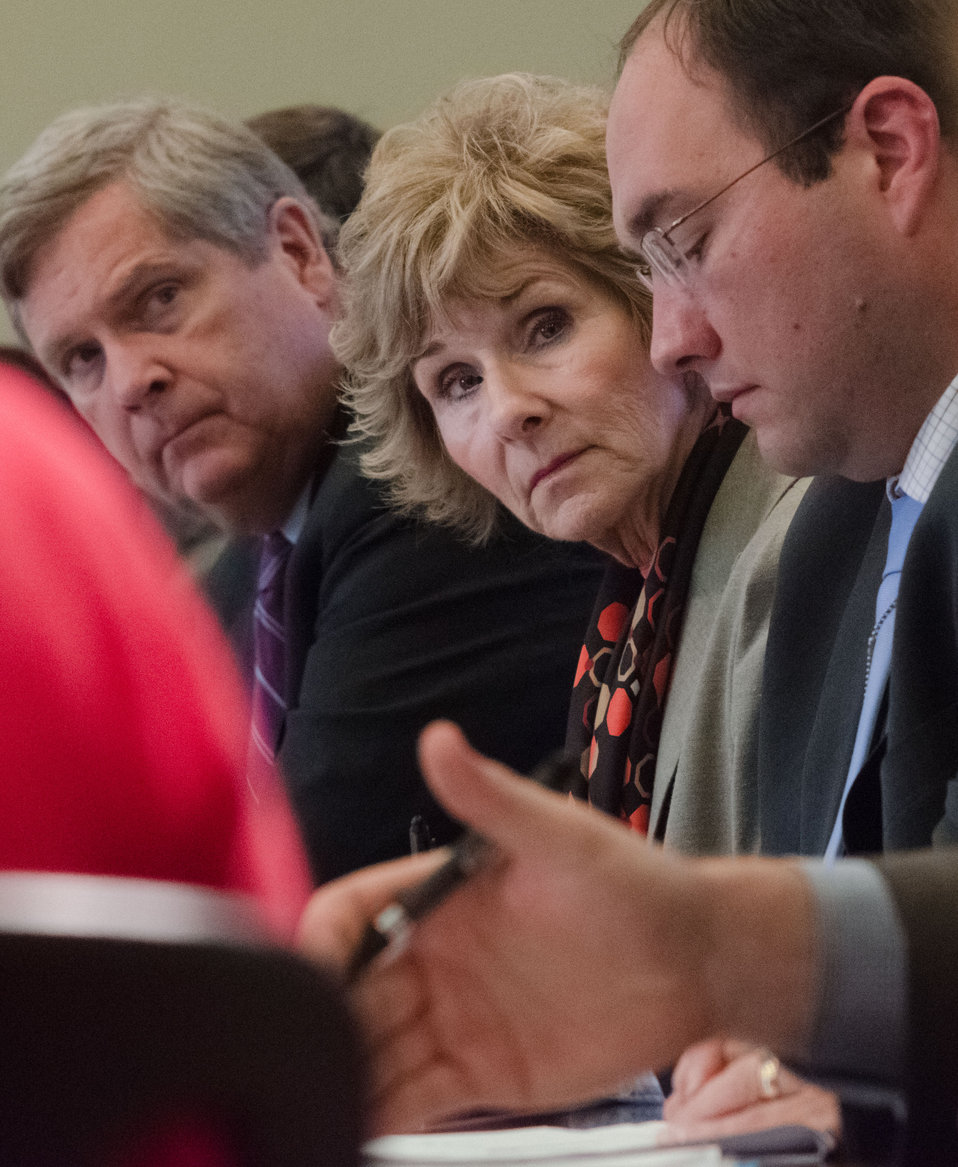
Federal Disaster Recovery Coordinator Colleen Callahan (center) and Agriculture Secretary Tom Vilsack (right), listen to a federal representative speak during the White House Rural Council meeting at the White House in Washington, D.C. on Friday, Oct. 5, 2012. The White House Rural Council discusses recent White House announcements and Secretary Vilsack asked council members to outline their work plan for the coming months.